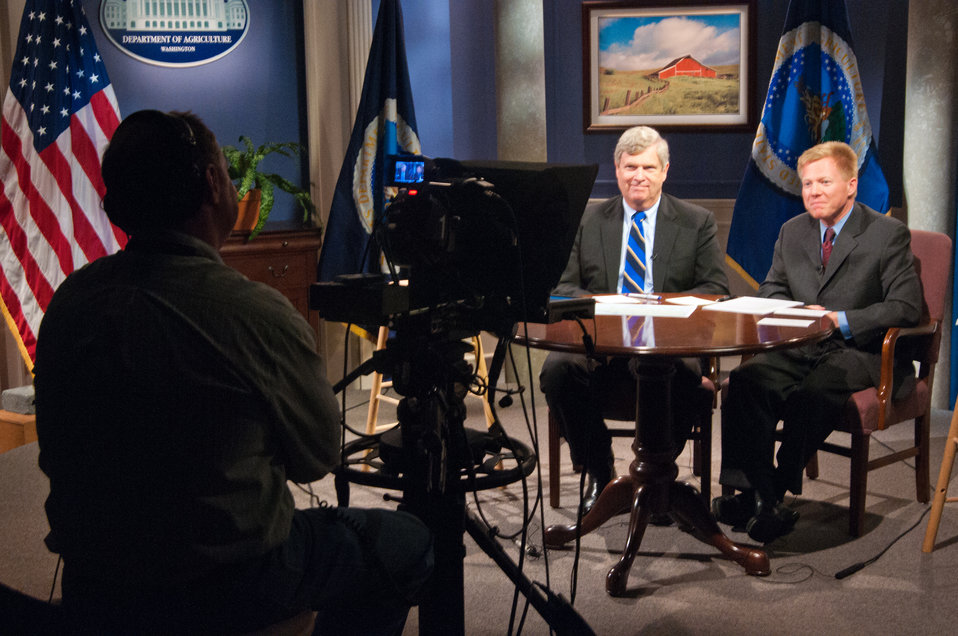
Agriculture Secretary Tom Vilsack and U.S. Department of Agriculture (USDA) StrikeForce Initiative Director Max Finberg participate in a Google Hangout to discuss StrikeForce opportunities, success stories and ways communities may get involved at USDA in Washington, D.C. on Monday, Jun. 17, 2013. The StrikeForce Initiative targets rural areas of persistent poverty where USDA staff can work with state, local and community officials to increase awareness of programs and services that help to promote economic development and job creation.